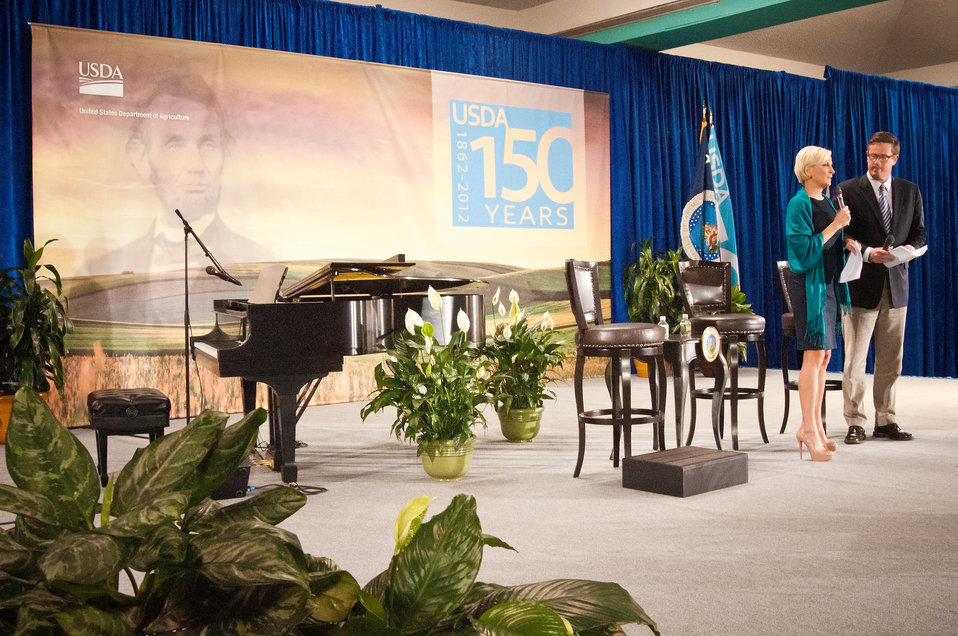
Mika Brzezinski and Former Congressman Joe Scarborough (R-Fla.) hosts of MSNBC’s “Morning Joe.” were the Masters of Ceremony for the United States Department of Agriculture's 150th Anniversary celebration in Washington, D.C., on Tuesday, May 15, 2012. On May 15, 1862 President Abraham Lincoln signed into law on Saint Isador’s Day, The Patron saint of Farmers, an act of Congress establishing the U.S. Department of Agriculture. President Abraham Lincoln referred to the Agriculture Department as the “People’s Department”. He knew the importance of agriculture to our prosperity – particularly at a time when about half of all Americans lived on the farm.